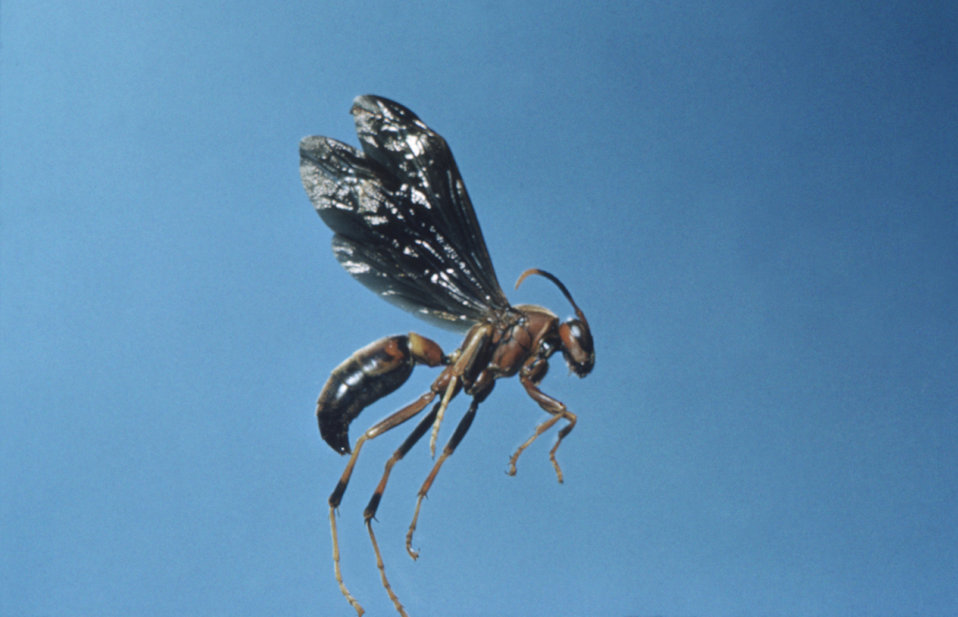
This photograph of a wasp was taken during a 1972 study of disease carriers, and pests common to migrant labor camps.